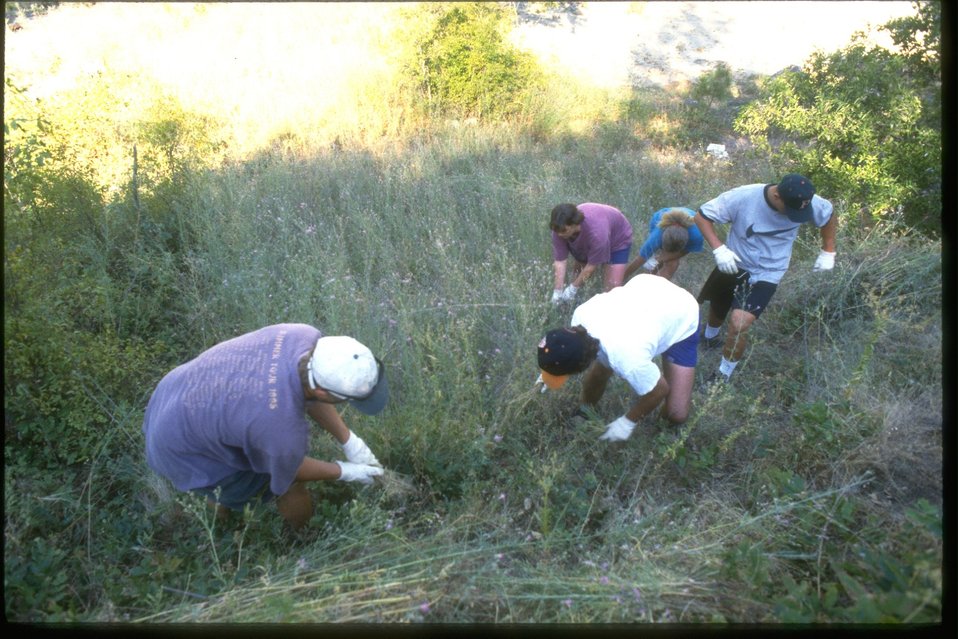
Boise High School students pulling knapweed along the Salmon River, Idaho.